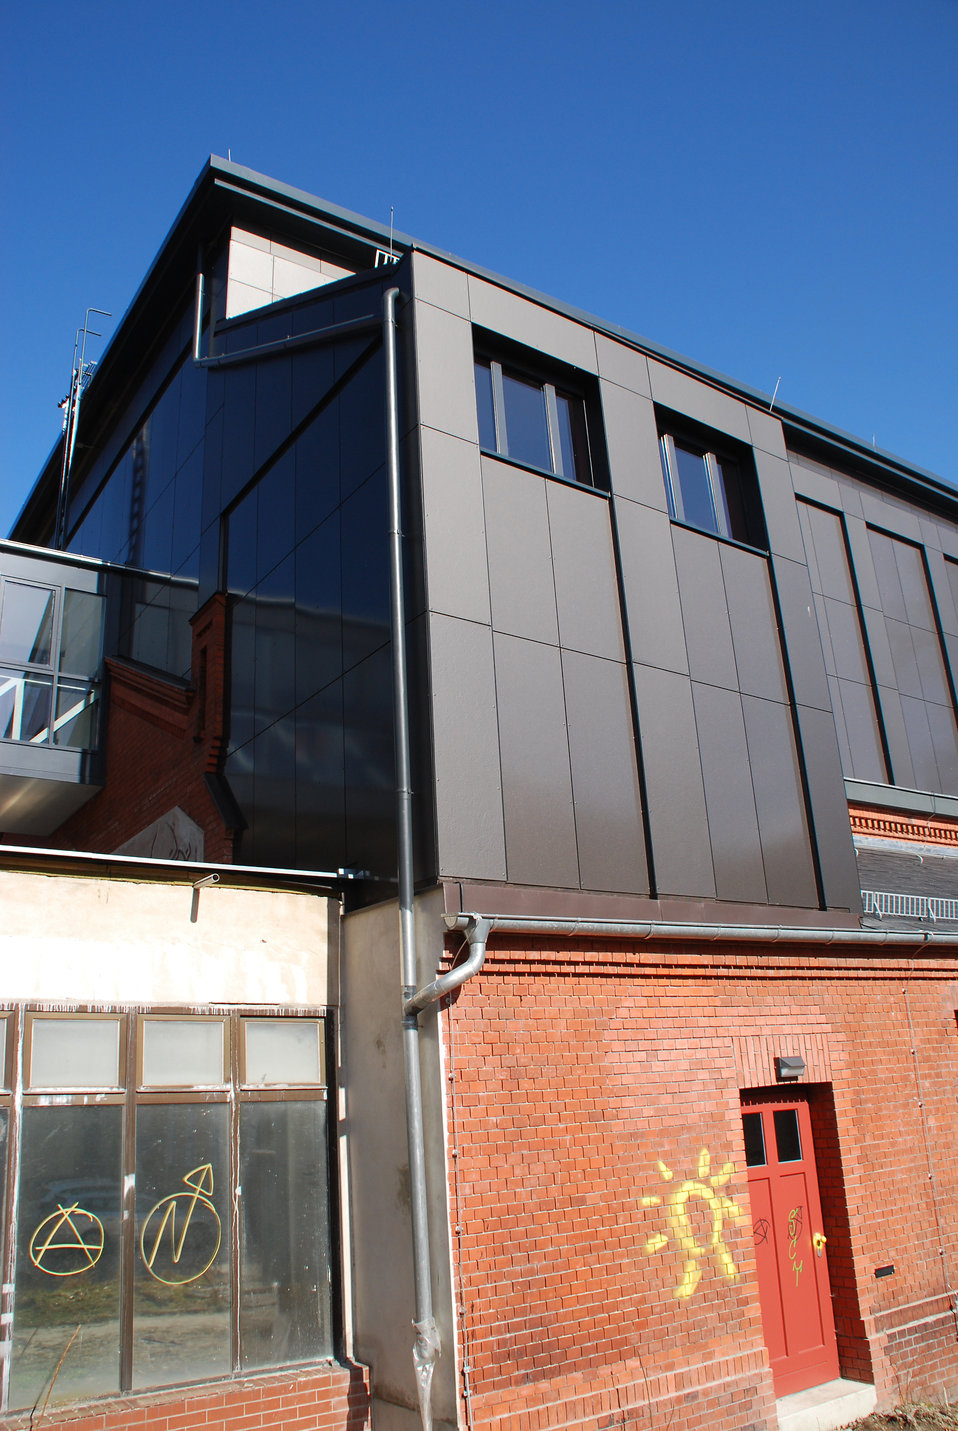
Abriss Bahnhofstunnel Frankfurt (Oder) Ehemaliges Friedrichsgymnasium Turnhalle um ein Stockwerk aufgestockt